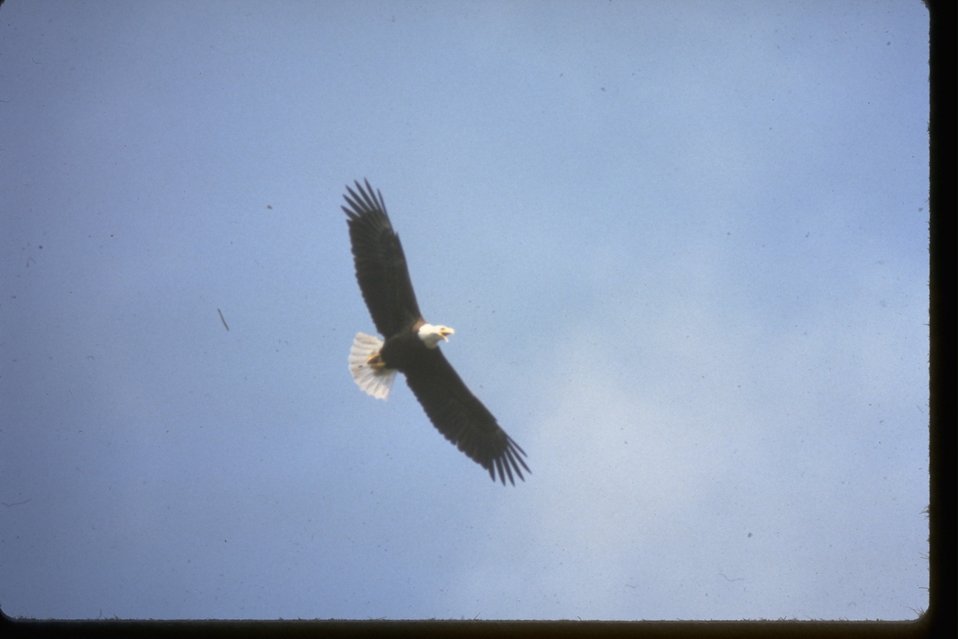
Bald Eagle soaring through the sky. Scientific name: Haliaeetus leucocephalus. Family: Accipitridae.